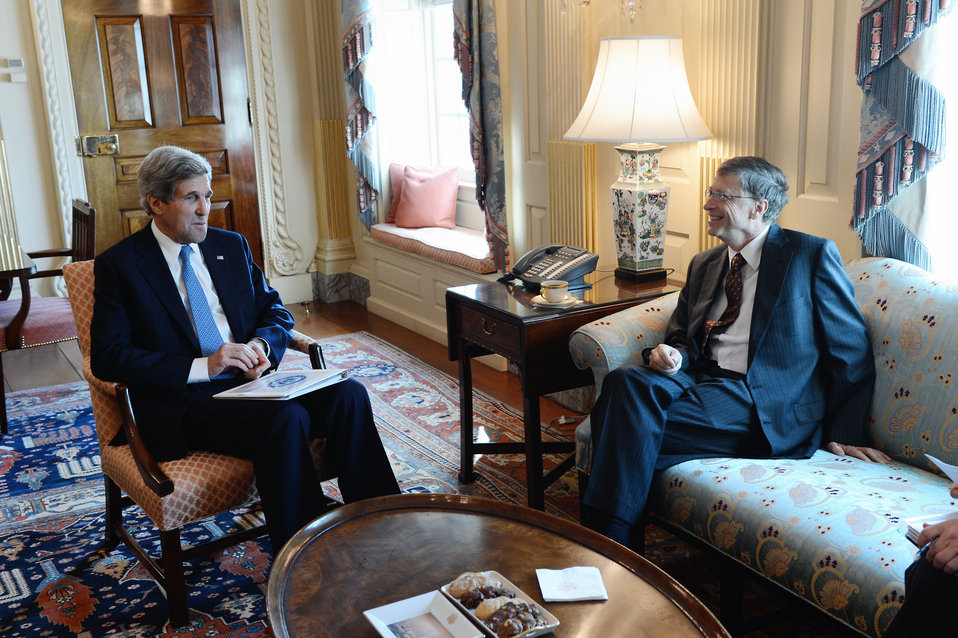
Secretary Kerry Meets With Bill Gates

U.S. Secretary of State John Kerry and Ambassador Eric Goosby, the U.S. Global AIDS Coordinator, not pictured, meet with Bill Gates at the U.S. Department of State in Washington, D.C., on March 13, 2013.